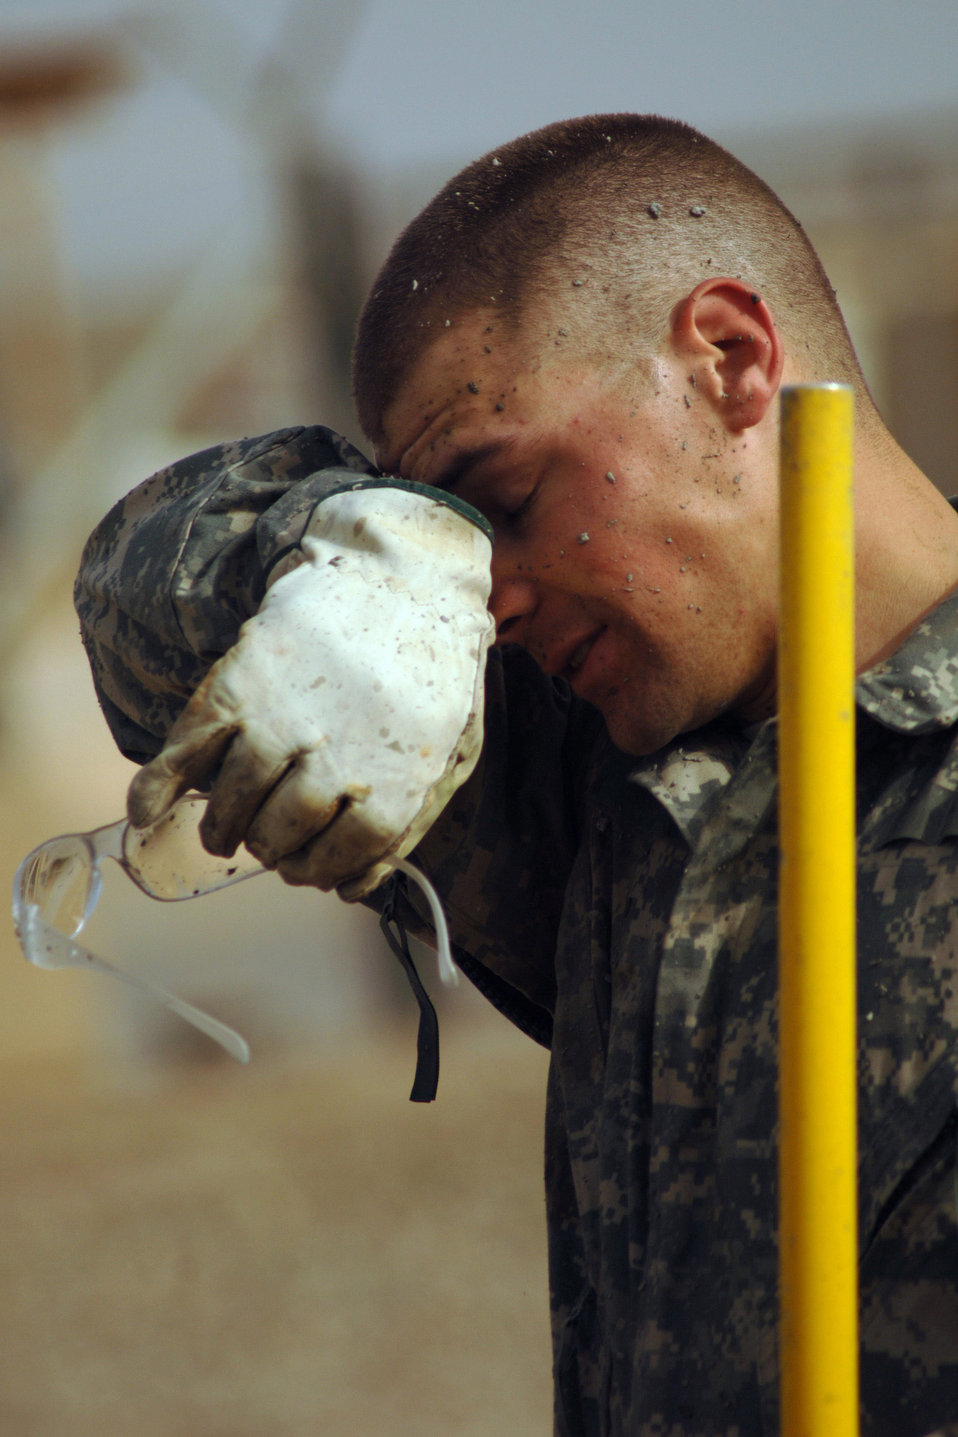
Set in stone

Senior Airman James Smith stops to wipe his brow after helping lay more than 35 meters of concrete Feb. 15 during a construction project at Joint Base Balad, Iraq. Airman Smith, a native of Geneva. N.Y., is construction equipment operator with the 332nd Expeditionary Civil Engineer Squadron and is deployed from Elmendorf Air Force Base, Alaska.